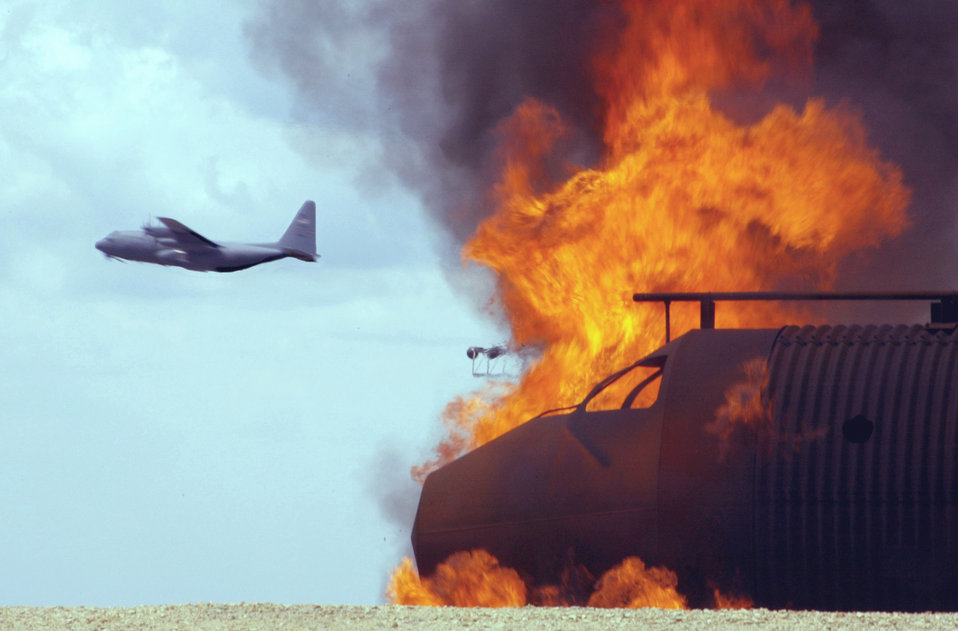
Fire pit

POPE AIR FORCE BASE, N.C. -- An aircraft fuselage and cockpit burns at the aircraft fire training pit here as a C-130 Hercules takes off. The base fire department's training pit allows Pope firefighters to safely practice extinguishing aircraft fires. During training, temperatures exceed 2,000 degrees in the pit.